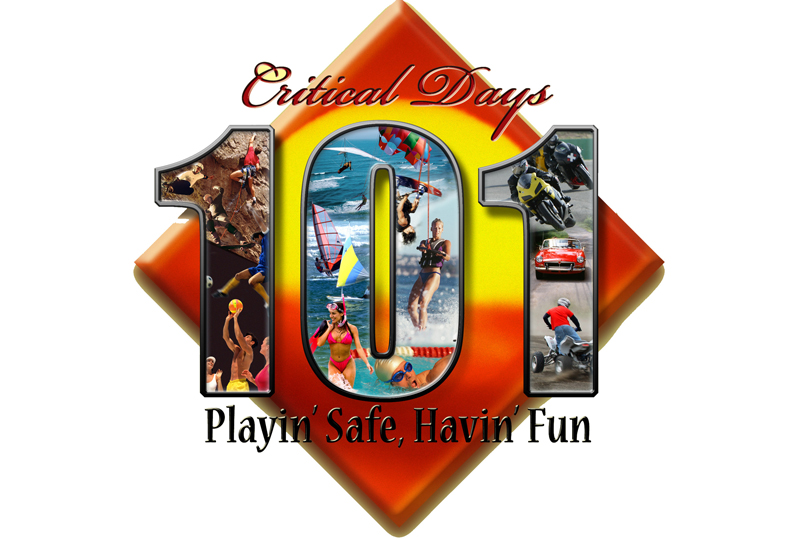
101 Critical days